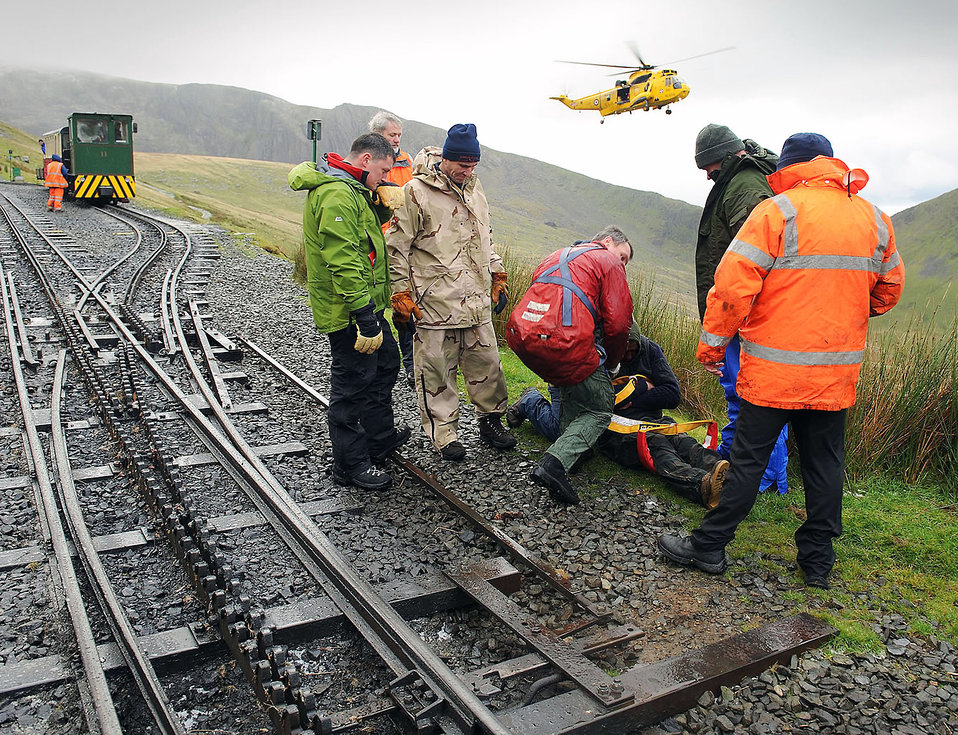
Bad weather, coincidences turn mountain climbing trip into rescue mission

Dave Wainwright, Chris Gould, Jerry Myles and Alan Coldwell watch with members of the Snowdon Mountain Railway to ensure the casualty they rescued from the top of Mount Snowdon is safely prepared by the winchman to be taken up into the rescue helicopter from 22 Squadron, Royal Air Force Valley, Wales. Mr. Wainwright is the 100th Force Support Squadron outdoor recreation director. Mr. Gould, Myles and Coldwell are Defence Fire Service firefighters assigned to the 100th Civil Engineer Squadron.